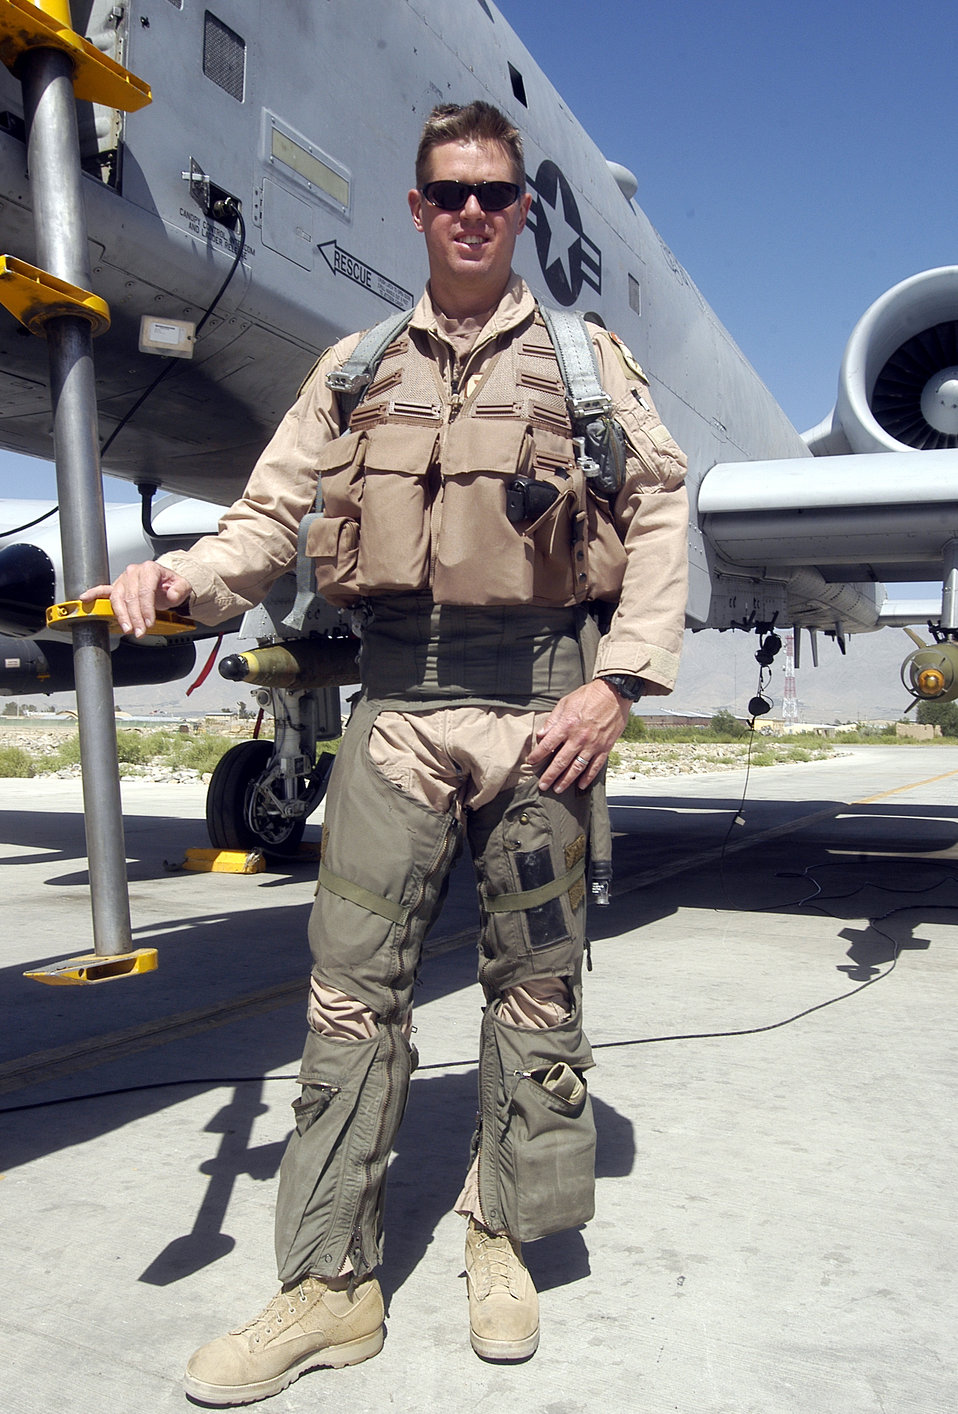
A-10 rescue

Maj. Steve Nester, an A-10 Thunderbolt II pilot with the 303rd Fighter Squadron at Whiteman Air Force Base, Mo., guided a civilian pilot to a safe landing in Springfield, Mo., March 11, 2010, after the civilian pilot radioed he was low on fuel and unable to make a landing due to bad weather. The 303rd FS is part of the 442nd Fighter Wing, an Air Force Reserve unit at Whiteman AFB.